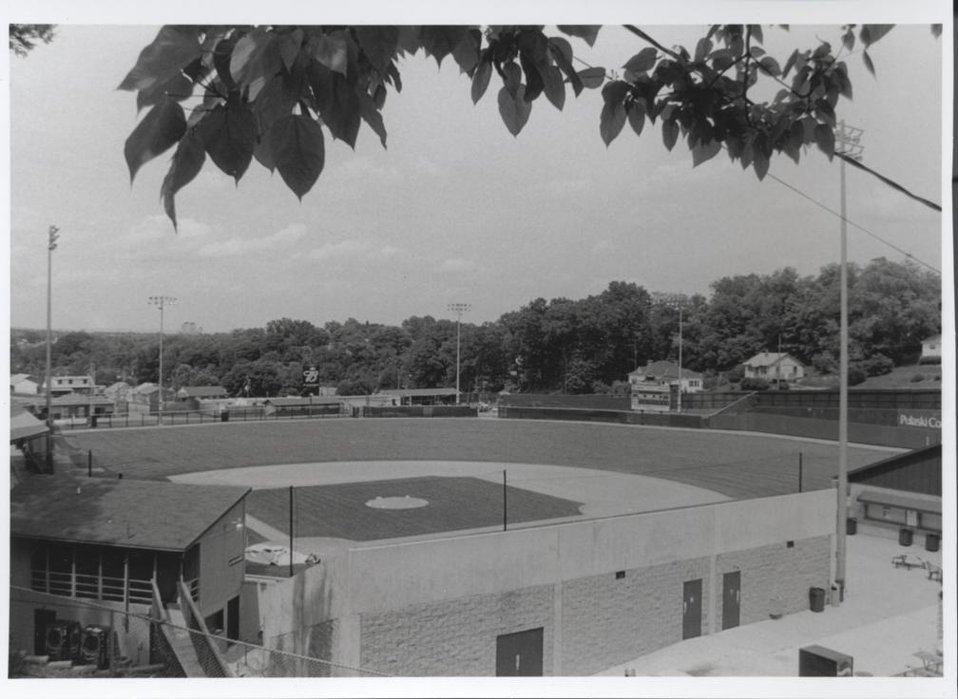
Calfee Park
Pulaski, Virginia